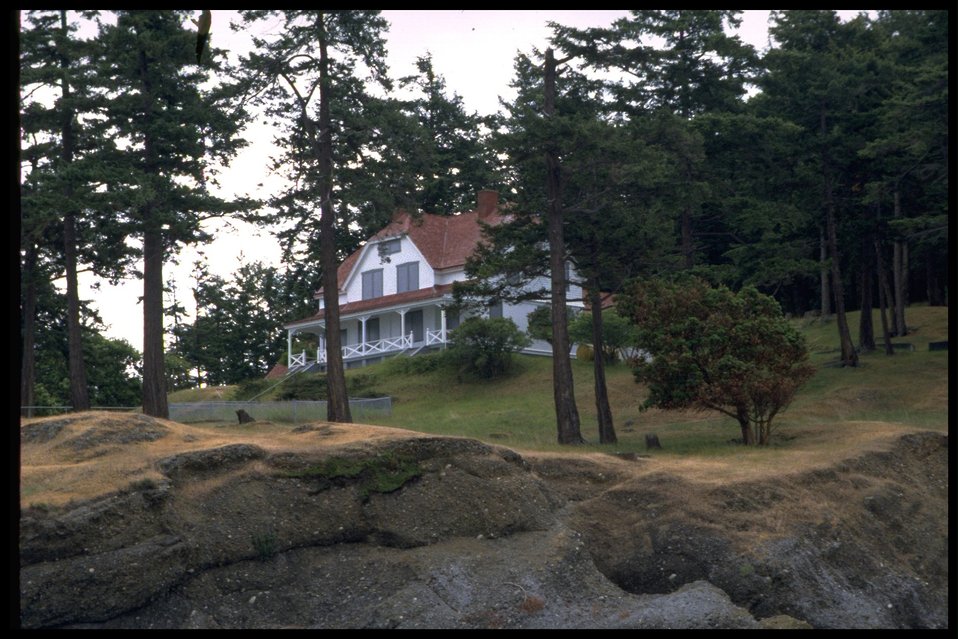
Turn Point from water with light station and buildings. Series of 17 photos.